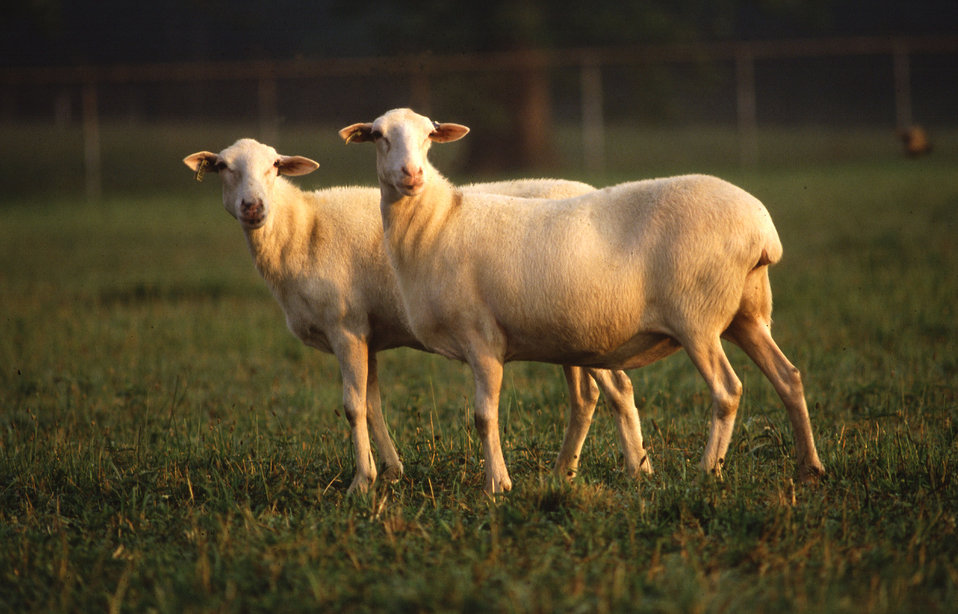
St. Croix hair sheep have a high resistance to certain internal parasites such as barberpole stomach worms.